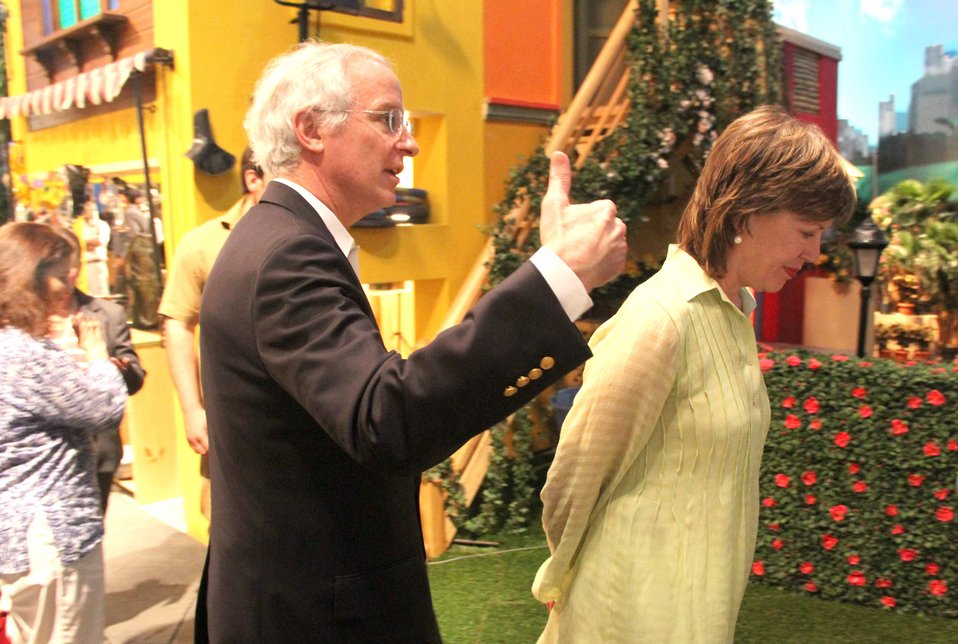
U.S. Ambassador’s Visit to Sim Sim Hamara Highlights U.S. Commitment to Improved Children’s Education in Pakistan at Lahore on 28 April, 2012